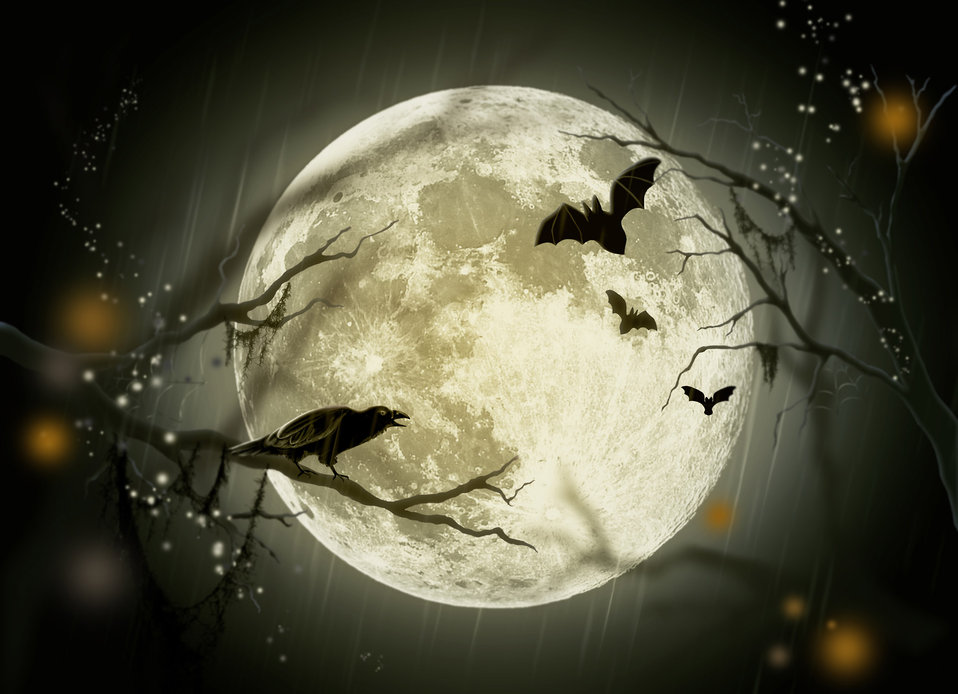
Halloween

Drawn card for the holiday halloween.